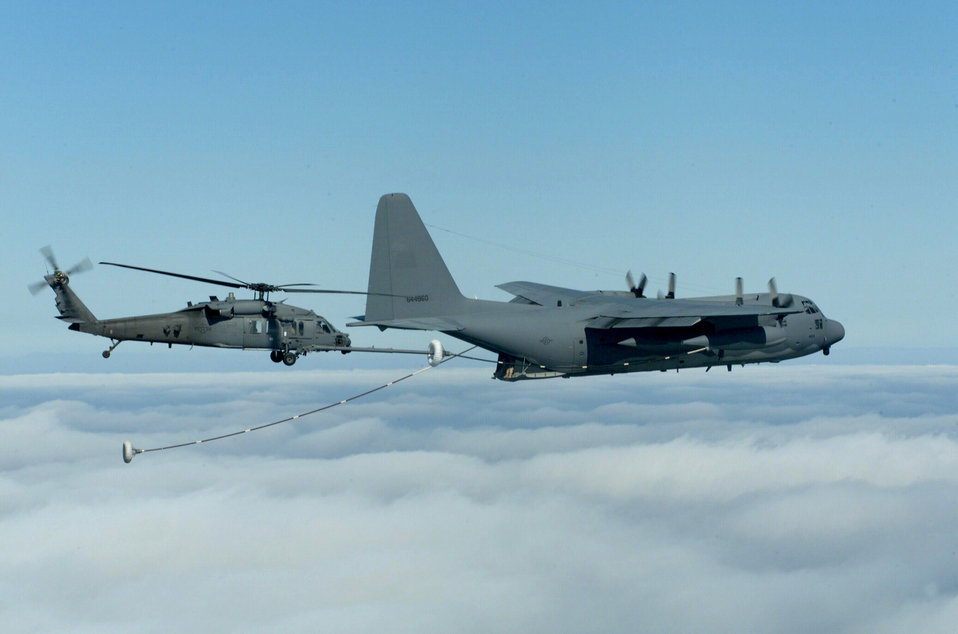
Got gas?

OVER SAN DIEGO, Calif. - An HH-60 from the 55th Rescue Squadron's moves in to refuel from the 79th Rescue Squadron's C-130 here. This is part of a water rescue training exercise conducted jointly between the 55th, 79th, and 48th Rescue Squadrons, all a part of the Air Force Search and Rescue Operations Mission at Davis-Monthan Air Force Base, Ariz.